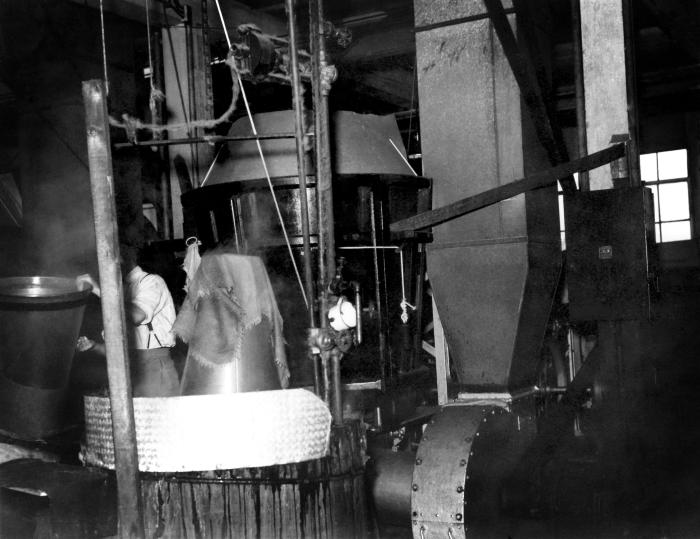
Provided by the Center for Disease Control's (CDC), National Institute for Occupational Safety and Health (NIOSH), this historic image, shot inside a Connecticut hat manufacturing plant, depicted a hatters' industry worker manipulating a hatting cone, on which hats are shaped using the steam that could be seen wafting throughout the workplace. Working with newly processed fur, which had been 'carroted', or fixed with mercury nitrate, workers could be exposed to airborne mercury, thereby, suffering the detrimental neurologic consequences from its inhalation. Using steam facilitated the airborne dissemination of this neurotoxic element. It could not be determined from this image, as to whether or not this man was wearing a filtered breathing mask.